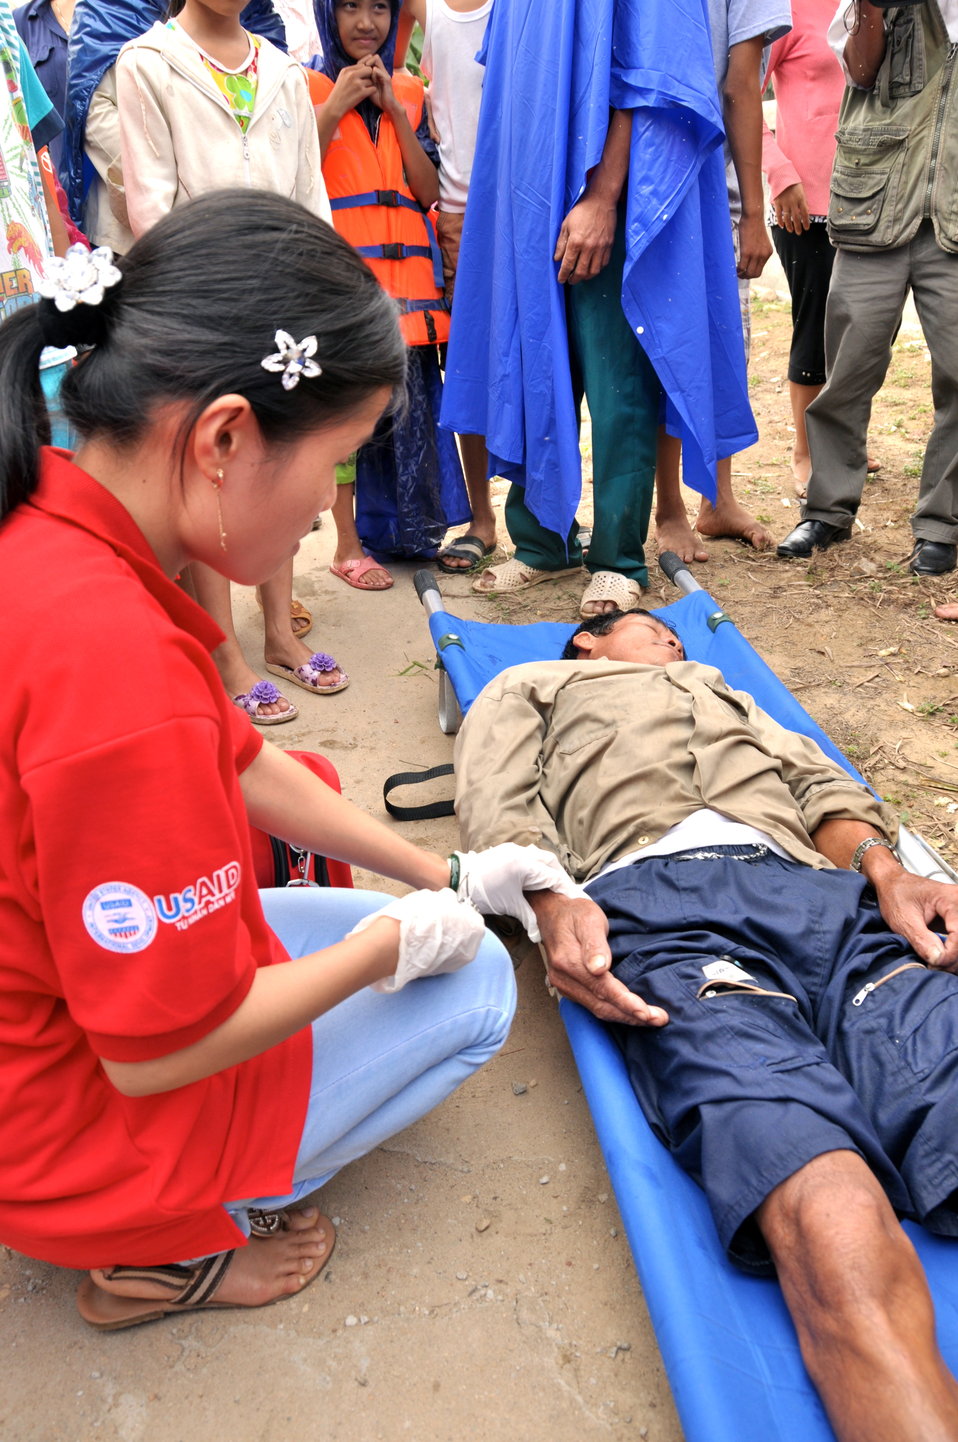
USAID and Save the Children support community evacuation drill and emergency preparedness in central Vietnam

Loc An Commune, Phu Loc District, Thua Thien Hue Province
December 4, 2012, Photo: Richard Nyberg, @USAIDVietnam